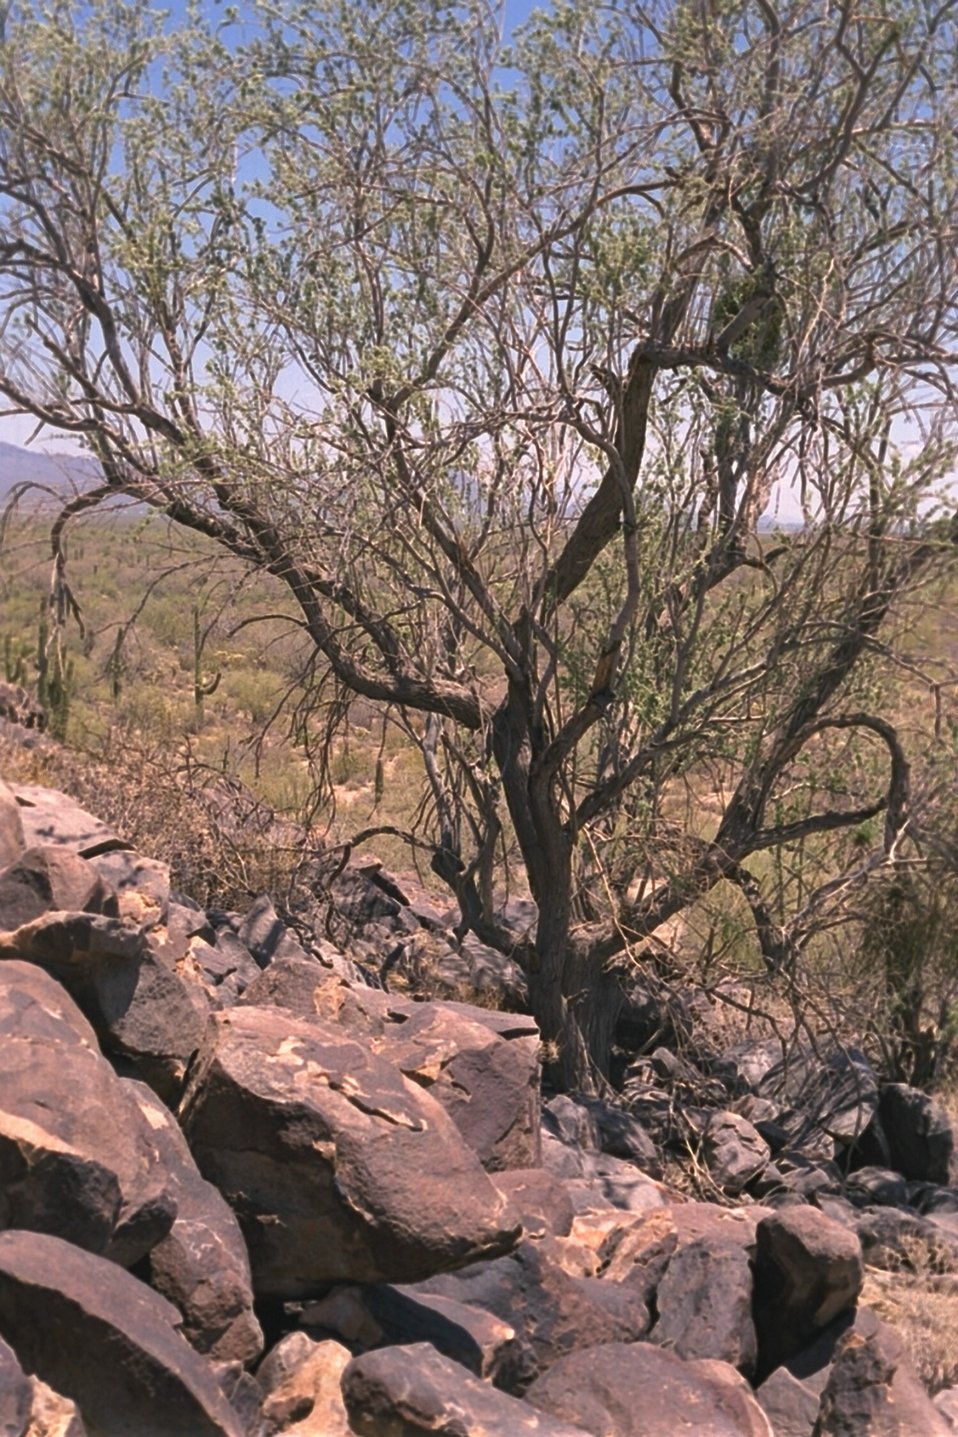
Palo Verde tree staning tall next to a mound of petrogylphs at the Cocoraque Butte Archaeological District. (This site is close to the Southern boundary of the monument.)